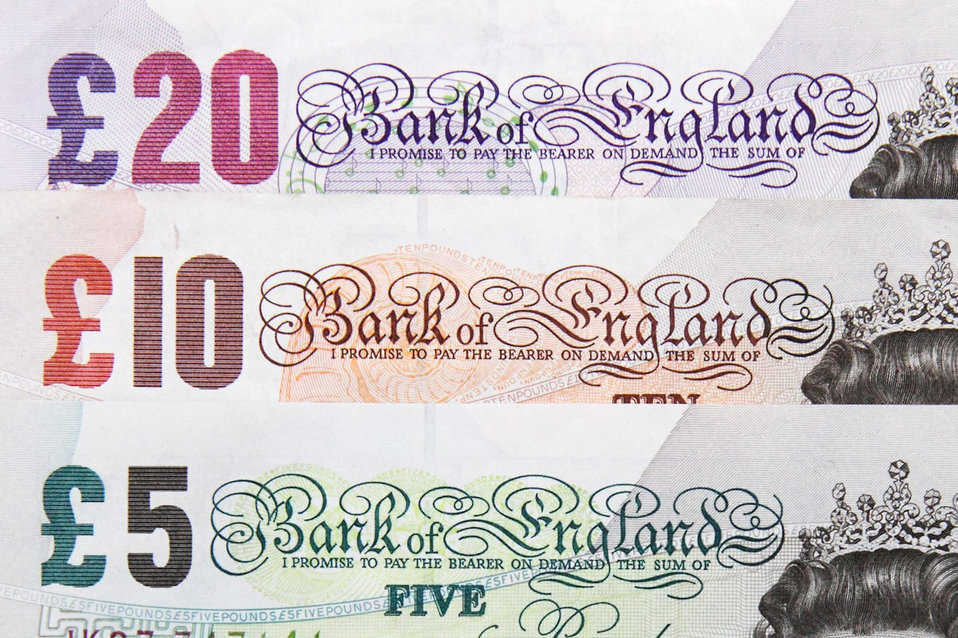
British banknotes

Five, ten and twenty pounds banknotes.